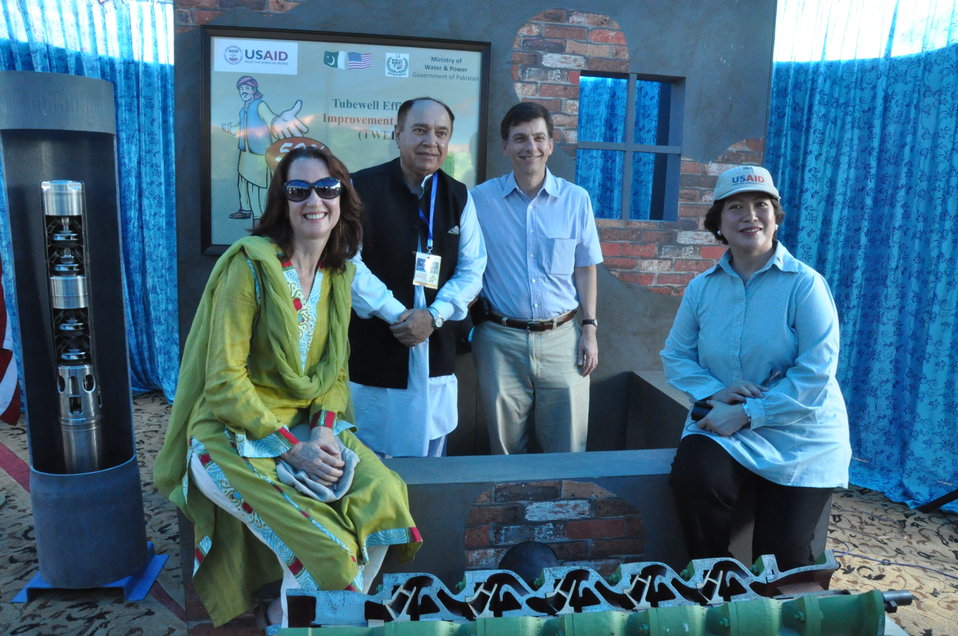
USAID Tube Well Efficiency Improvement Program